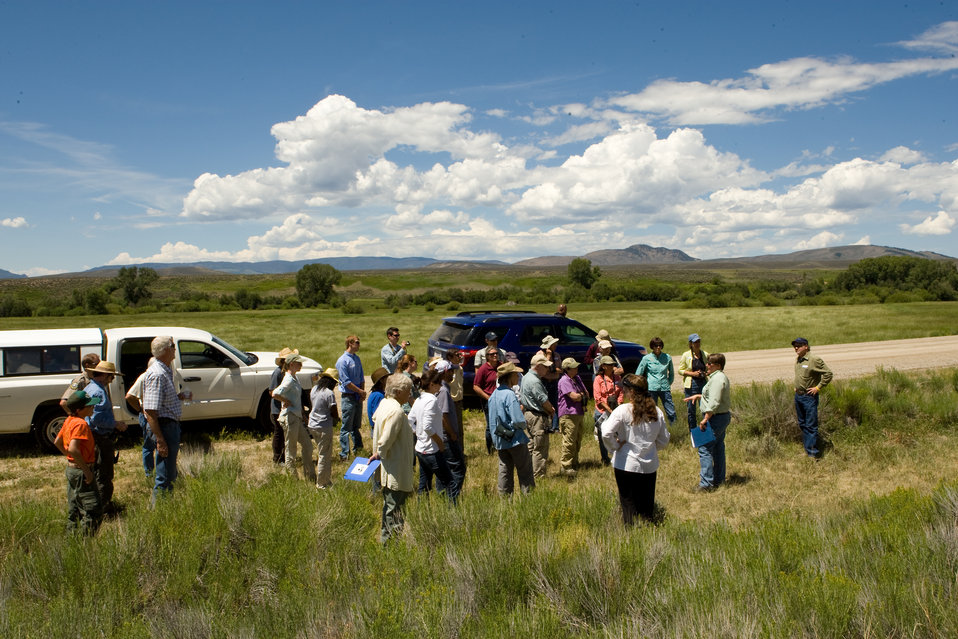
Colorado Rare Plant Conservation Initiative

The Colorado Rare Plant Conservation Initiative (RPCI) is a partnership of 23 statewide and regional agencies, private organizations, and academic institutions working to conserve 121 rare plants in Colorado. As part of these efforts the group developed the Colorado Rare Plant Conservation Strategy, developed Best Management Practices to reduce energy development impacts, addressed climate change, and developed focused strategies for the conservation of individual species at eight priority landscapes. The group has also worked to coordinate volunteer efforts for plant conservation across the state.